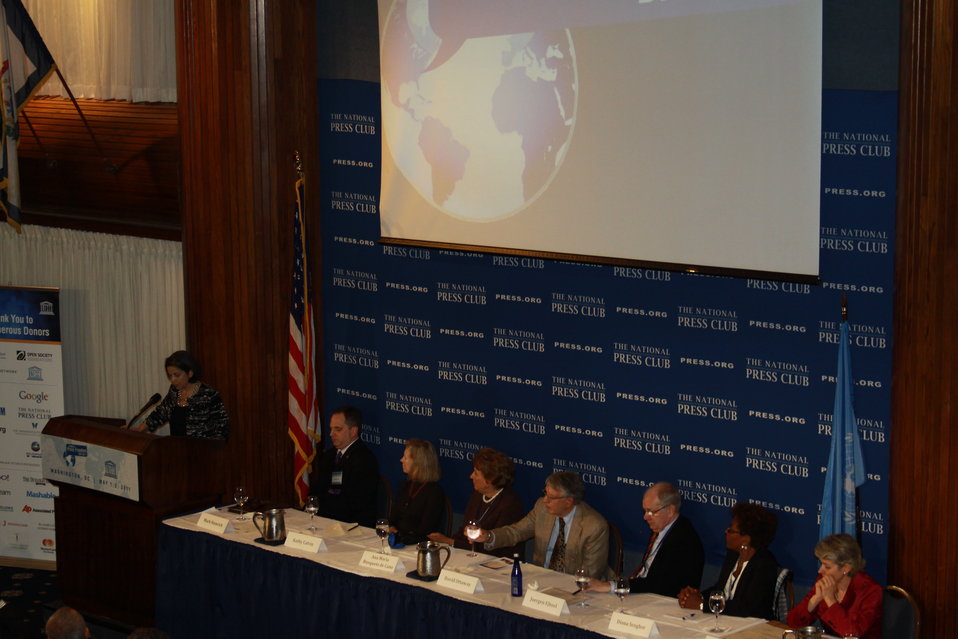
Under Secretary Otero Addresses the Closing Ceremony

Under Secretary of State for Democracy and Global Affairs Maria Otero addresses the closing ceremony of the 2011 World Press Freedom Day Global Conference, at the National Press Club in Washington, D.C., on May 3, 2011.